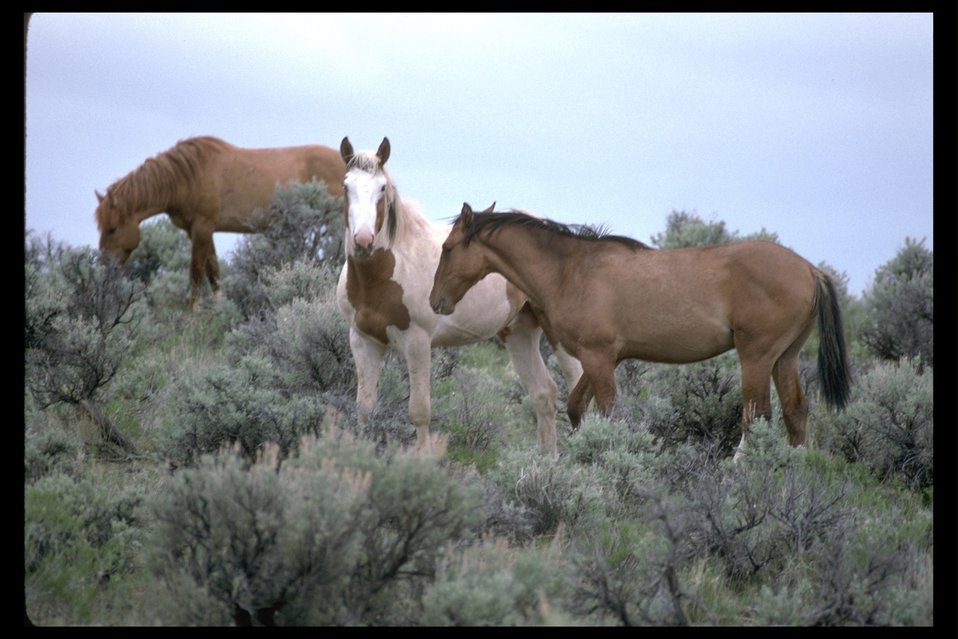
Wild horses in the South Steens HMA.